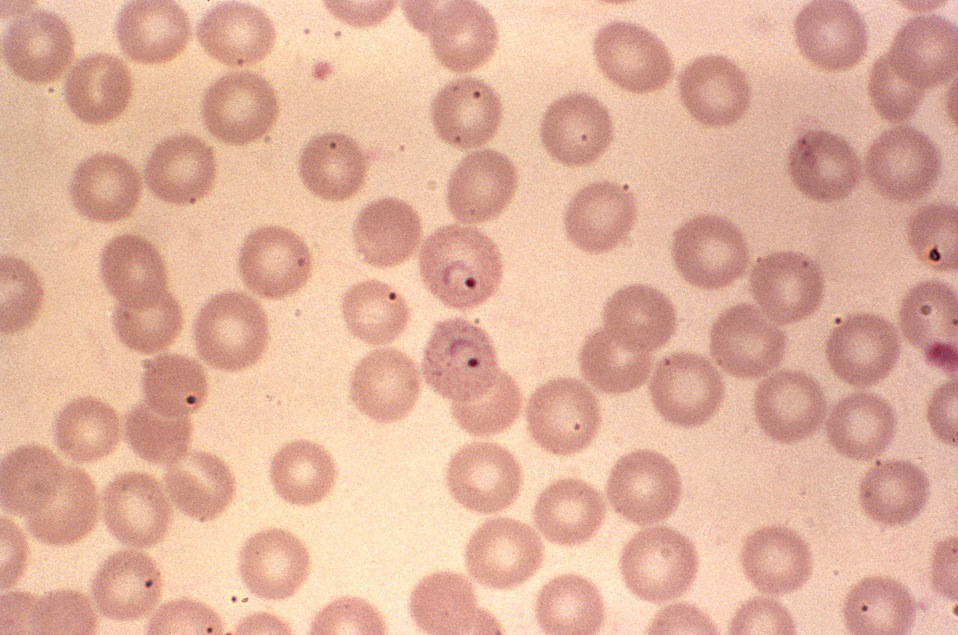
This thin film Giemsa stained micrograph revealed two ring-form Plasmodium vivax trophozoites.